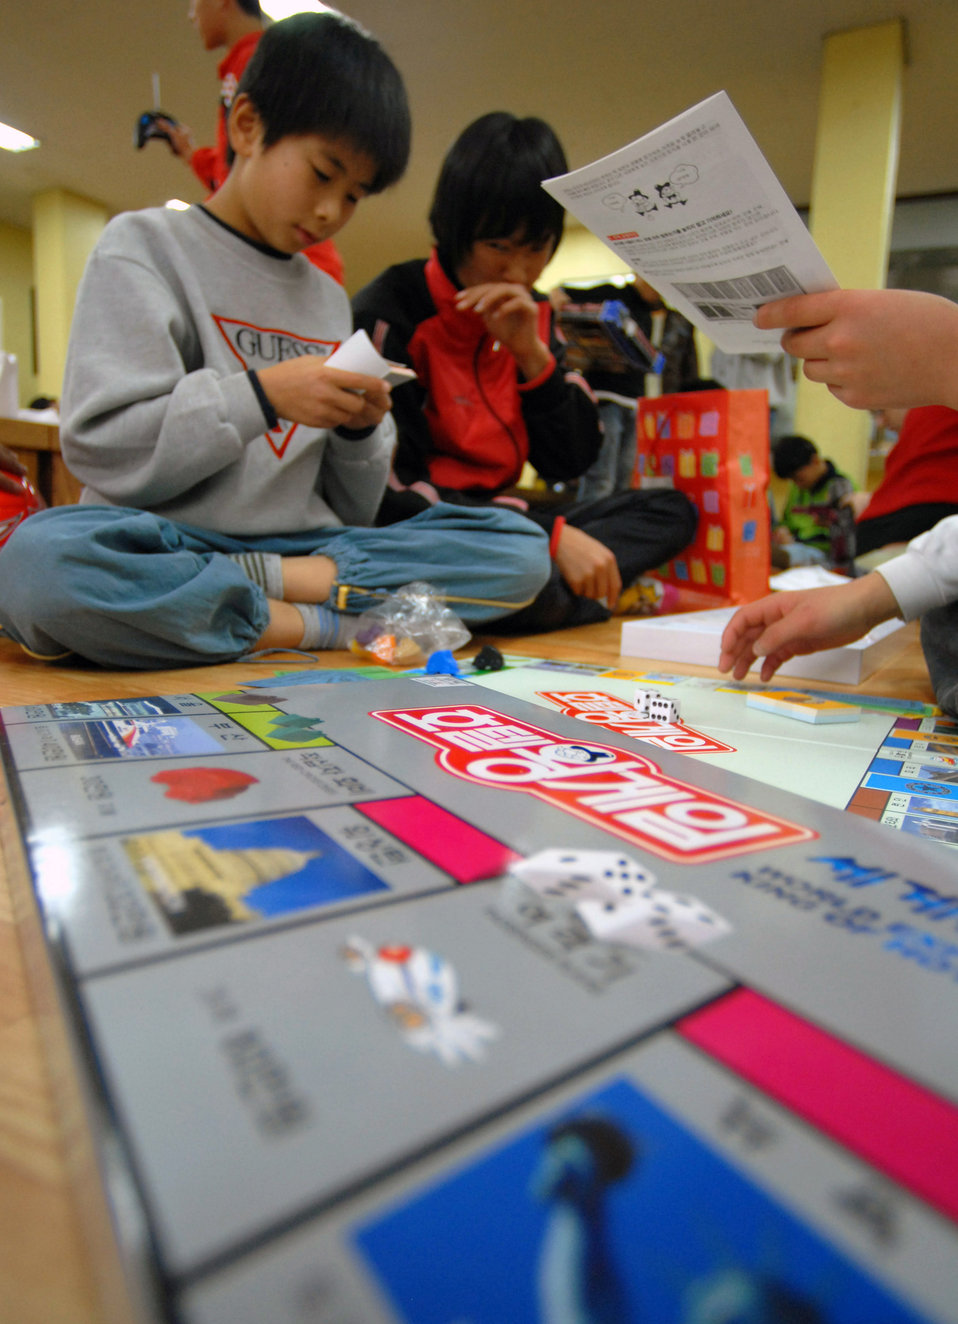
Airmen deliver Christmas to South Korean orphanage

Children from the Kae Jong orphanage play a Korean version of Monopoly here Dec. 15 in Kae Jong, South Korea. Airmen from Kunsan Air Base, South Korea, spent the afternoon handing out gifts, coloring, eating, and playing with the children. The Airmen donated various gifts to include beanie babies and a PlayStation 2.